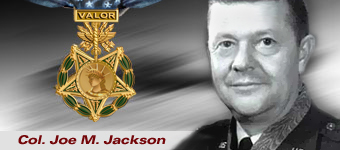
Col. Joe M. Jackson

Col Joe M. Jackson, Medal of Honor recipient.